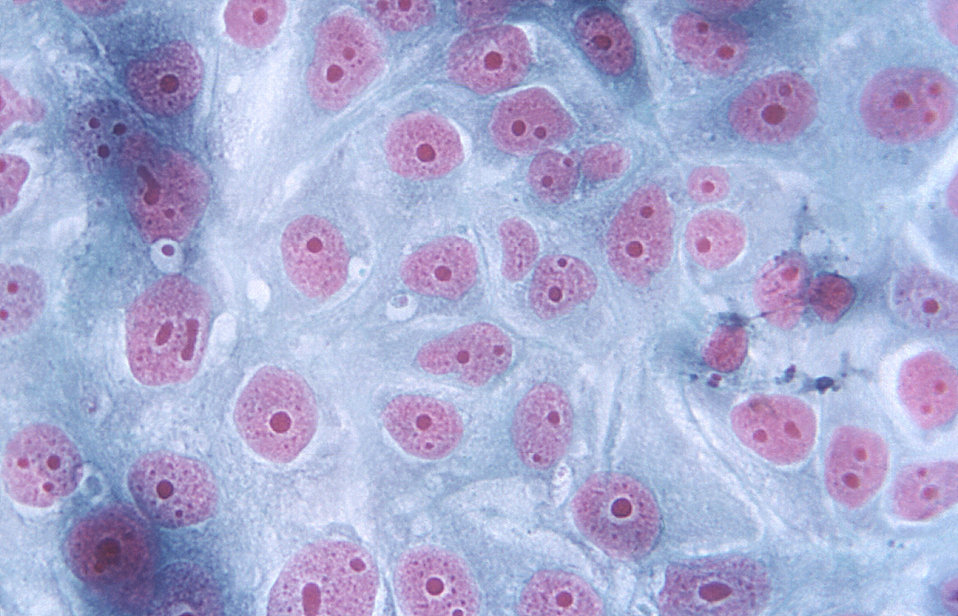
This photomicrograph revealed some of the normal cytoarchitectural morphology found in a section of meningeal tissue.